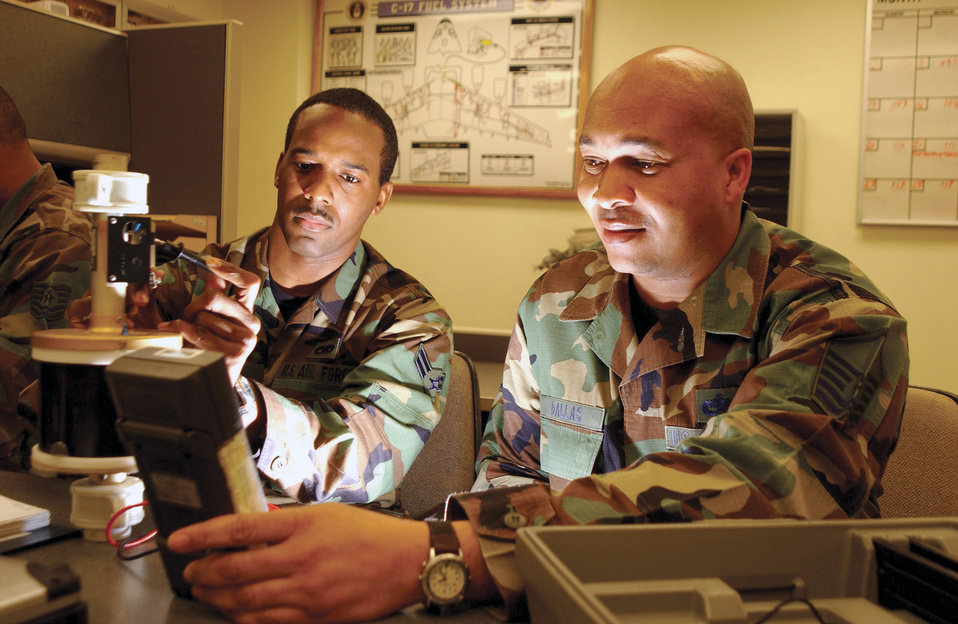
Money savers

CHARLESTON AIR FORCE BASE, S.C. -- Airman 1st Class Antonio Gault (left) and Master Sgt. Lyndon Dallas check a compensator probe, which helps determine how much fuel is in an aircraft fuel tank. Aircraft fuels systems specialists here teamed with Boeing engineers to fix a probe problem that emerged early during Operation Enduring Freedom. The team developed procedures to remove and clean the probes, saving taxpayers the approximately $844,000 it would have cost to replace all four probes on every C-17 Globemaster III in the fleet. Gault and Dallas are assigned to the 437th Maintenance Squadron here.